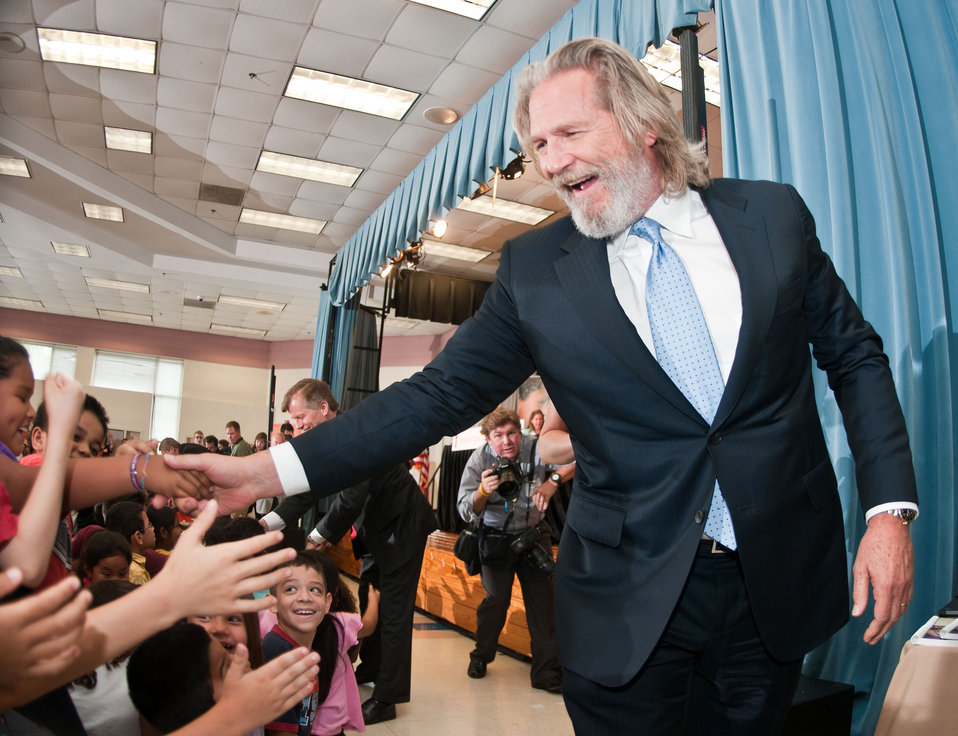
Academy Award Winner and No Kid Hungry National Campaign Spokesperson Jeff Bridges, and other speakers at the Virginia No Kid Hungry Campaign launch, shake the hands of students at the Barcroft Elementary School in Arlington, VA, on Tuesday, June 7, 2011. One of the speakers, Agriculture Secretary Tom Vilsack said, “ We know our strength comes from out partnerships…” Campaign partners include Share our Strength, the Federation of Virginia Food Banks, corporate partners, education leaders, government agencies and community organizations. The Virginia Summer Meals for Kids Program is funded by the USDA and provides free summer meals at hundreds of sites across the Commonwealth of Virginia, but according to a new report released today by the Food Research and Action Center, more than 80 percent of those eligible do not participate. Governor McDonnell (behind Bridges) announced and stressed that all parents who want free meals for their kids in need, can simply call 211 to find a summer meals site near them.